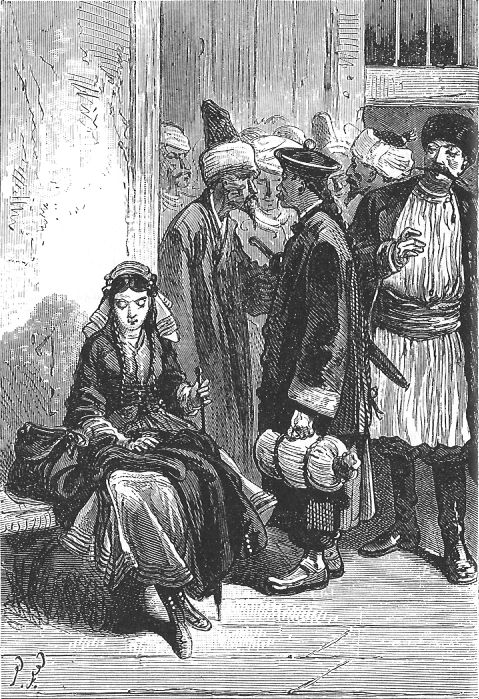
An illustration from the novel 'Michael Strogoff: The Courier of the Czar' by Jules Verne drawn by Jules Férat. Polski: Ilustracja powieści Juliusza Verne'a 'Michał Strogow, kurier carski' autorstwa Julesa Férata. Français : 'Michel Strogoff. Le courier du tzar', Jules Férat. Français : Là, sur un banc, tombée plutôt qu’assise…